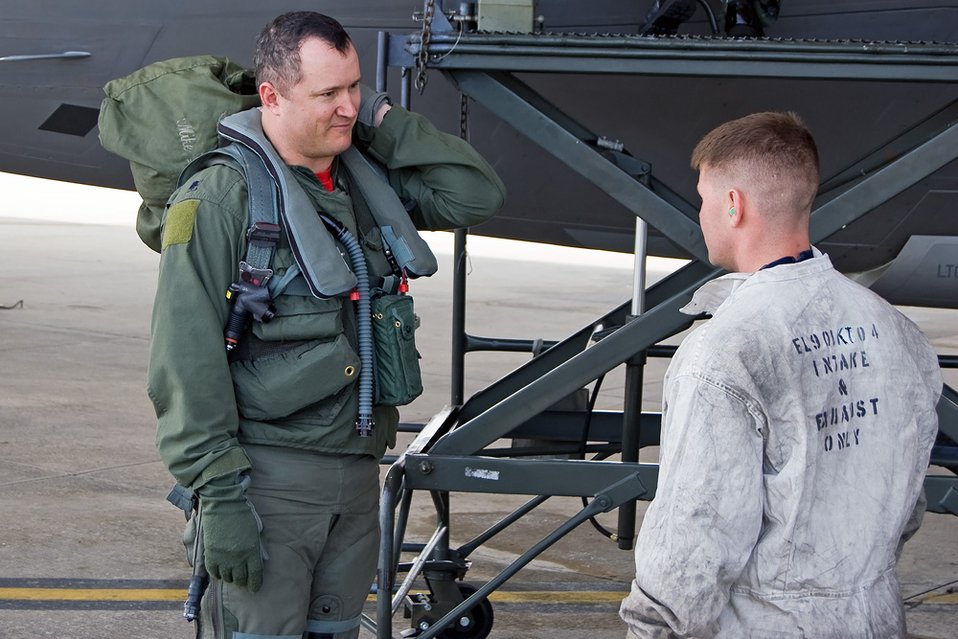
Elmendorf Airmen complete first F-22 deployment

Lt. Col. Mike Shower speaks with Staff Sgt. Charlie Grantham after completing a training sortie Feb. 4 at Tyndall Air Force Base, Fla. Members of the 3rd Wing and Air Force Reserve Command's 477th Fighter Group from Elmendorf AFB, Alaska, combined for its first F-22 Raptor deployment to Tyndall AFB for Combat Archer. The 132 Reserve and active-duty Airmen and eight F-22s from Alaska were in Florida for Weapons System Evaluation Program training. Colonel Shower is the 90th Fighter Squadron commander and Sergeant Grantham is assigned to the 90th Aircraft Maintenance Unit.